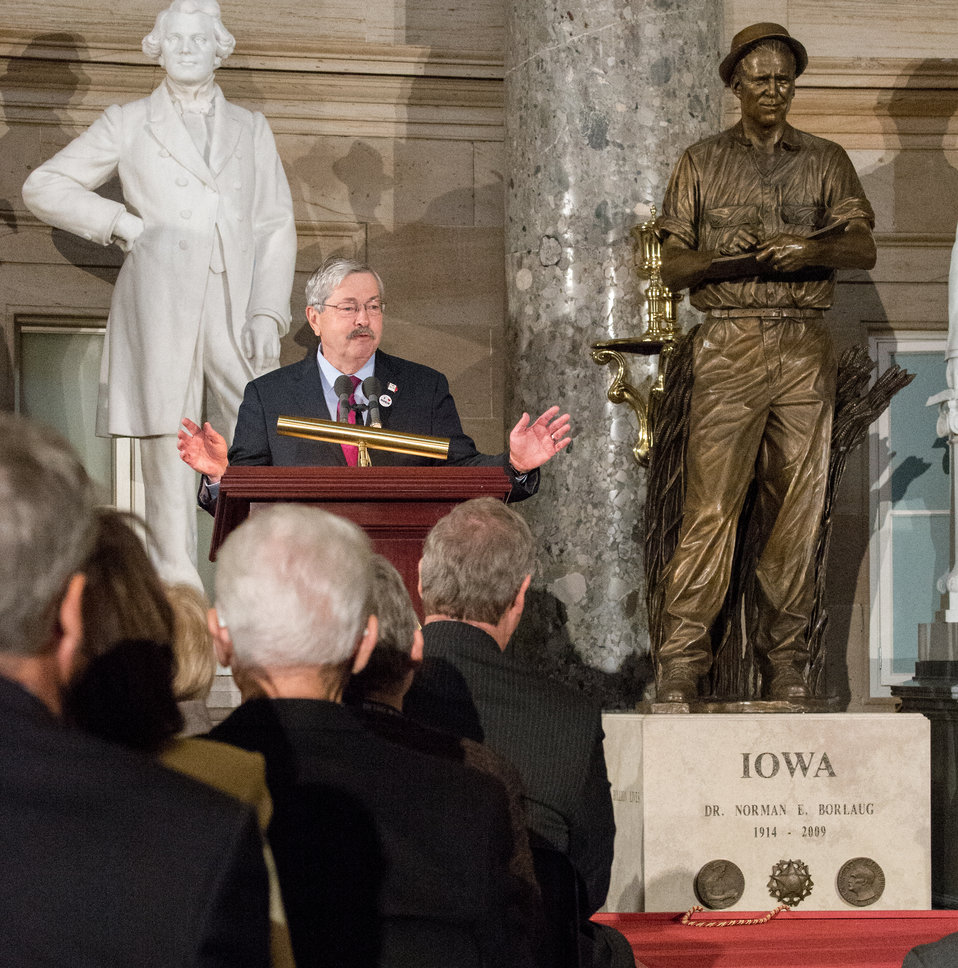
Iowa Governor Terry Branstad speaks at the dedication of the Dr. Norman Borlaug statue in the National Statuary Hall at the U. S. Capitol in Washington, D.C. on Tuesday, Mar. 25, 2014. Today commemorates 100 years since Dr. Borlaug’s birth. Through his scientific and humanitarian achievements, Nobel Laureate Dr. Norman E. Borlaug (1914-2009) has been credited with saving millions of people from starvation in developing countries. His collaborative work with scientists in Mexico on a high-yielding, disease resistant dwarf wheat sparked the Green Revolution of the 1960s. The National Statuary Hall Collection in the U.S. Capitol is composed of statues donated by individual states to honor persons notable in their history.